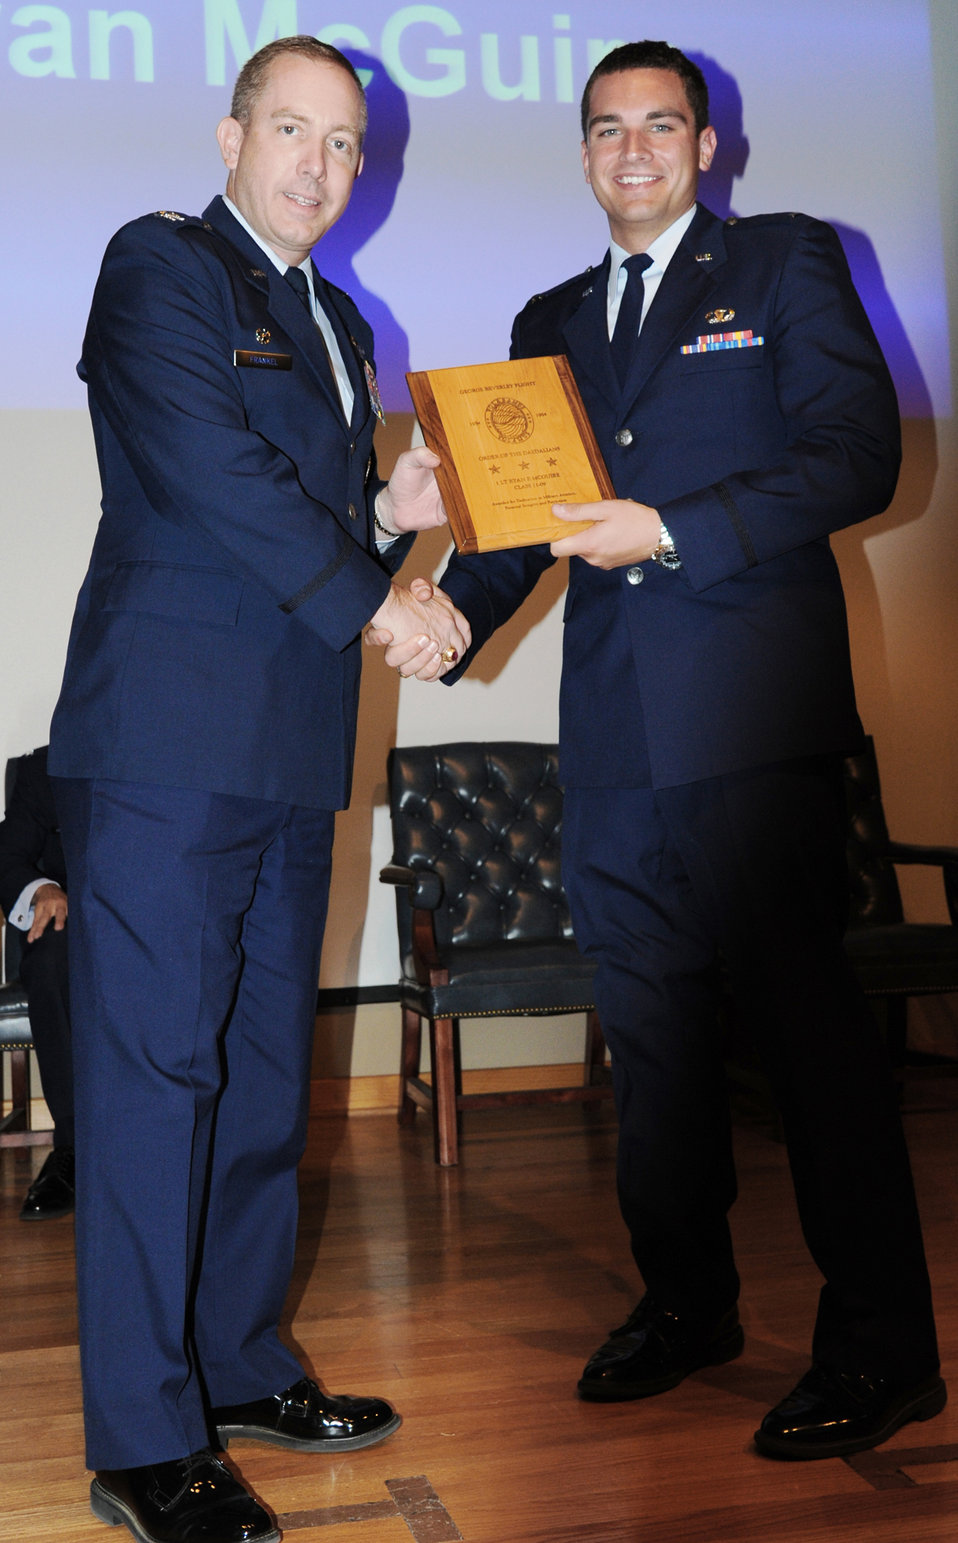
Amputee earns his wings

First Lt. Ryan McGuire (right) accepts the Daedalian Award from Col. Michael Frankel, the 47th Flying Training Wing commander, during graduation from Specialized Undergraduate Pilot Training May 20, 2011, at Laughlin Air Force Base, Texas. Lieutenant McGuire became the first person to graduate Air Force pilot training as an amputee. He is assigned to the 47th Operation Support Squadron.